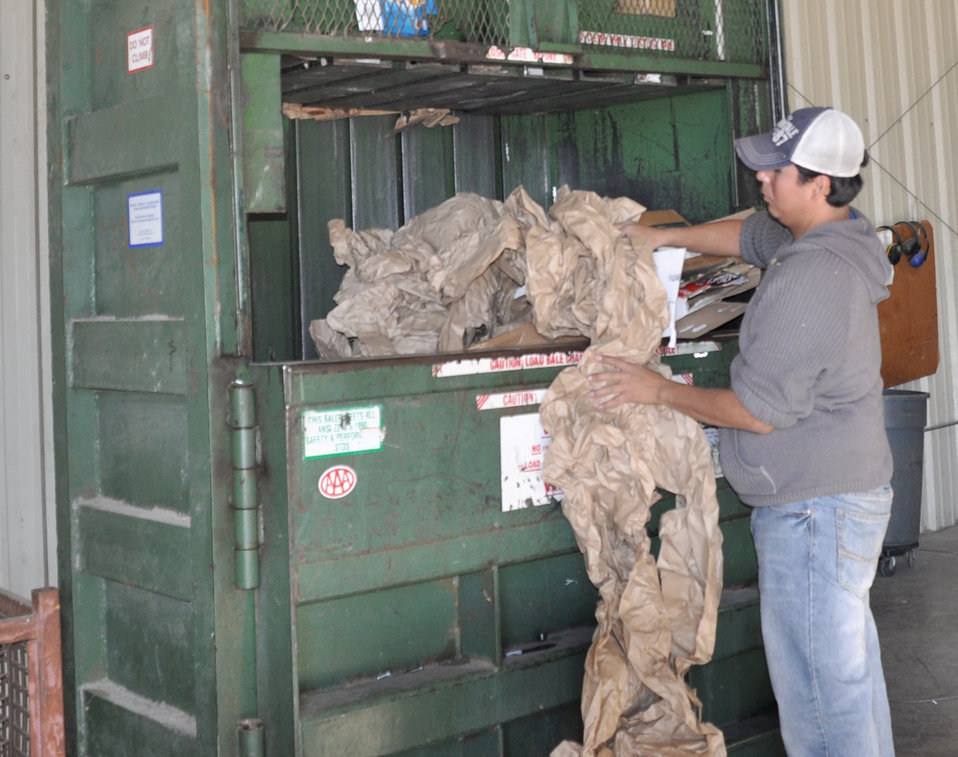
Recycling center

Rolando Deleon, a recycling center associate at Laughlin Air Force Base, Texas, puts paper into one of the center's five balers. The baler then compresses the material into a 1,000 to 1,200 pound bale, which is then transported to San Antonio for recycling.